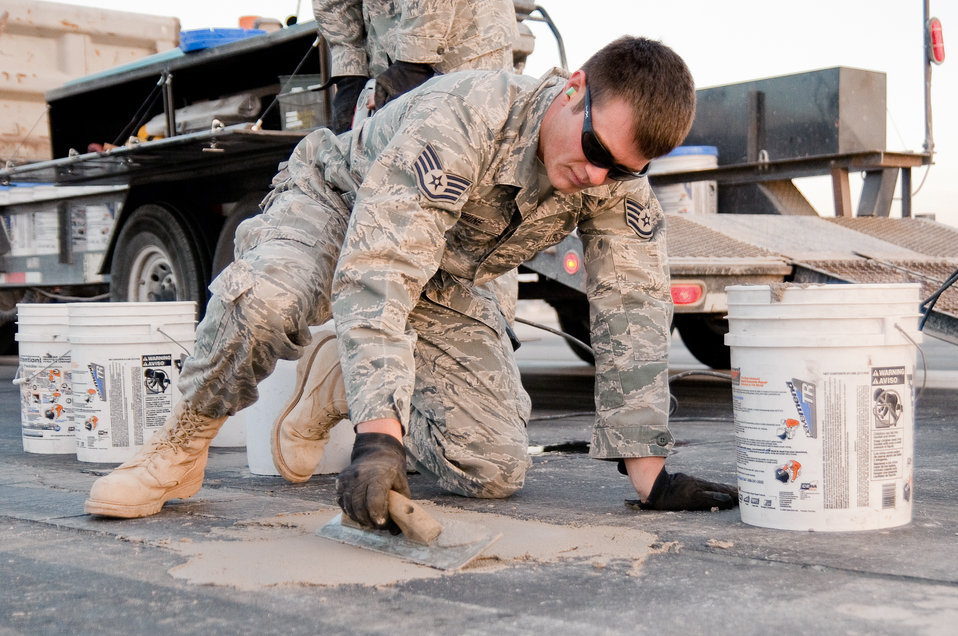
Runway repair team keeps airlift moving at 386th AEW

Staff Sgt. Brandon Terhune smoothes out a fresh runway patch Dec. 10, 2010, at an air base in Southwest Asia. Sergeant Terhune is a member of the 386th Expeditionary Civil Engineer Squadron. He and his coworkers in the 386th CES have made hundreds of runway repairs since deploying here in June 2010.